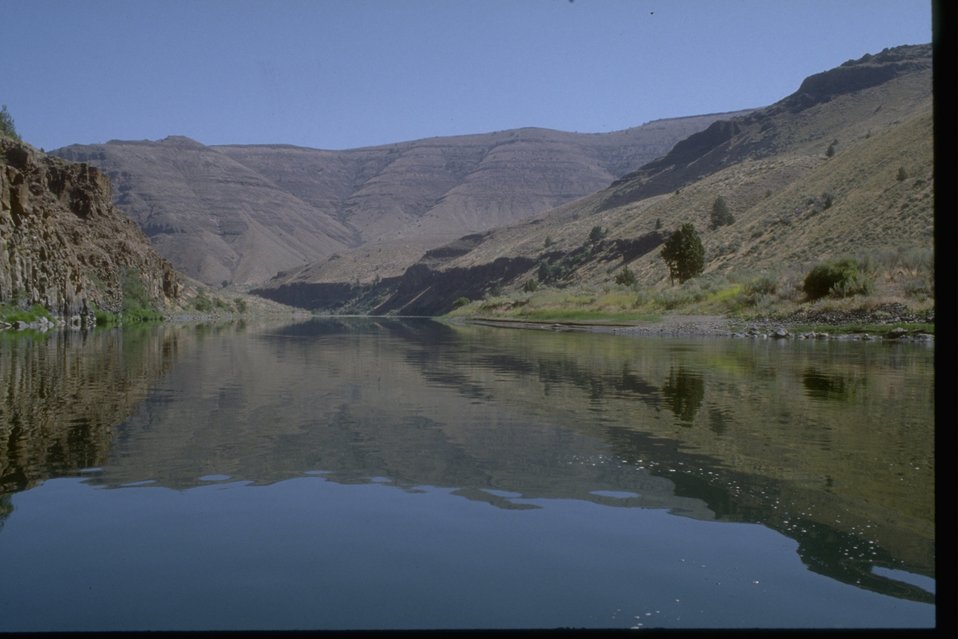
Looking down John Day River to the east of Knife Mountain.